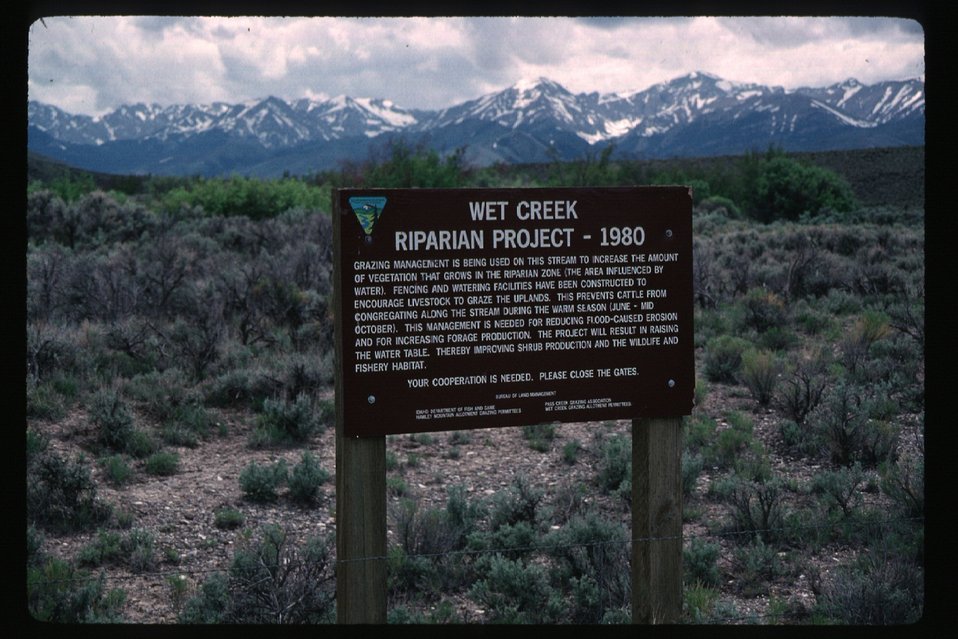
Wet Creek riparian project Idaho Falls Field Office USRD Upper Snake River District